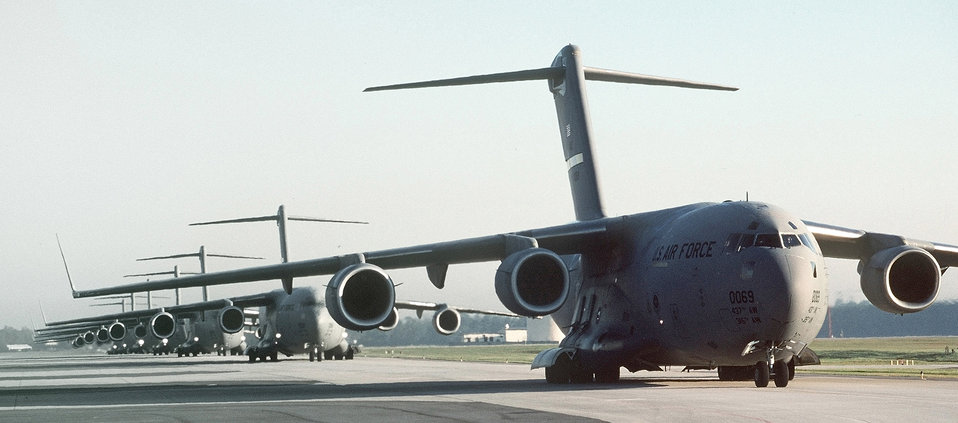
C-17 in a classic Moose Walk

In a classic